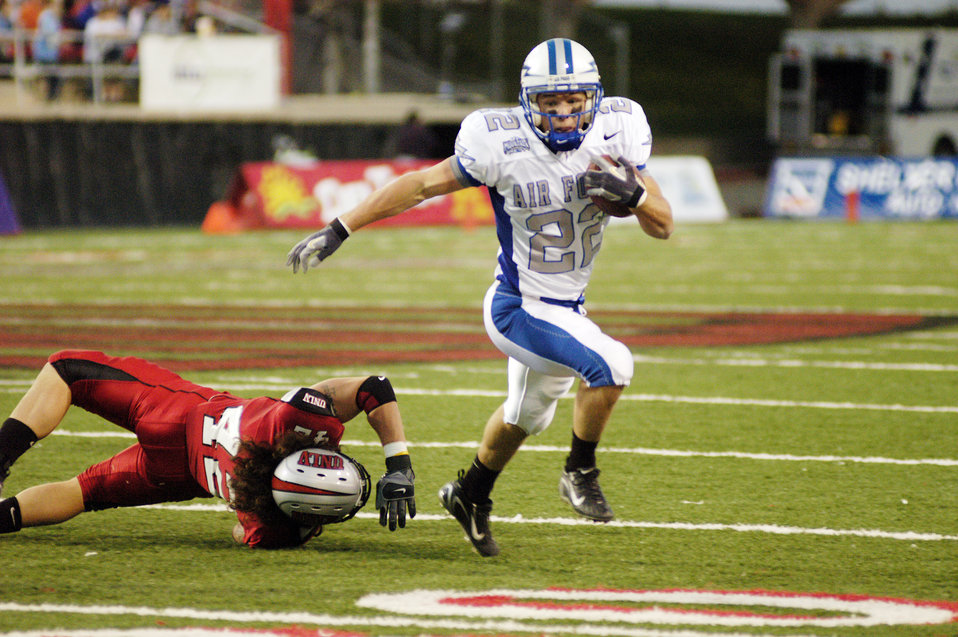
UNLV edges AF in 42-39 shootout

Falcons halfback Beau Suder, 22, eludes the tackle of University of Nevada-Las Vegas defensive back Jay Staggs during the Air Force's 42-39 loss Nov. 24 in Las Vegas. Suder finished the game with 20 yards on three carries and a 20-yard touchdown reception.